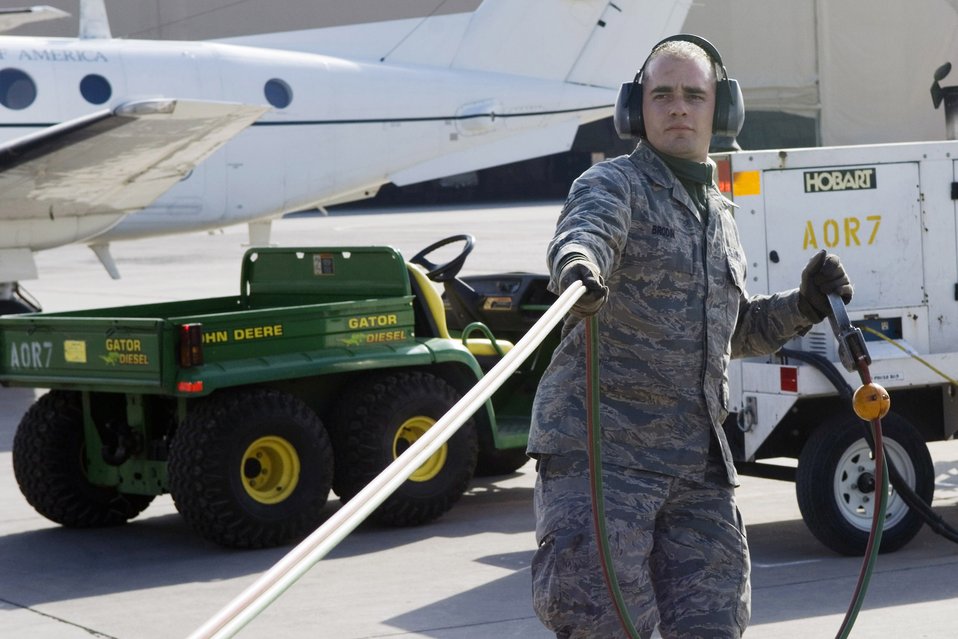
8 fuels Airmen surpass million-gallon mark in 4 months

Airman 1st Class Shaun Brodin pulls on the fuel trigger line for more slack Jan. 19 at Balad Air Base, Iraq. The 332nd Expeditionary Logistics Readiness Squadron Fuels Management Flight collectively pumped more than 15 million gallons of gas during their deployment. Airman Brodin, a 332nd ELRS fuels distribution operator, is deployed from Little Rock Air Force Base, Ark.